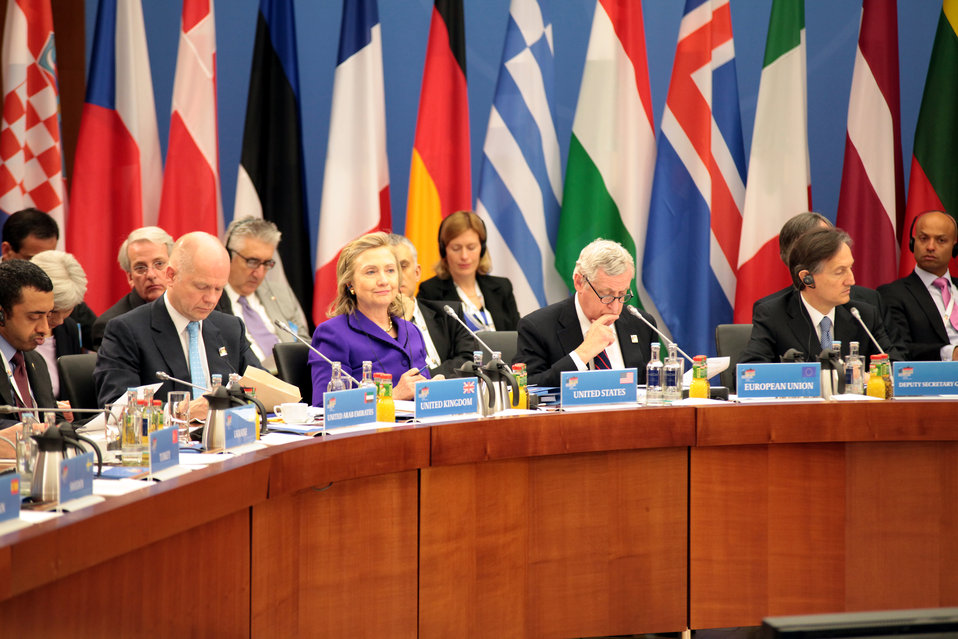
Secretary Clinton Participates in a Working Lunch With NATO Foreign Ministers

U.S. Secretary of State Hillary Rodham Clinton participates in a working lunch of NATO Foreign Ministers in the Europe Room of the German Foreign Ministry in Berlin, Germany, on April 14, 2011.